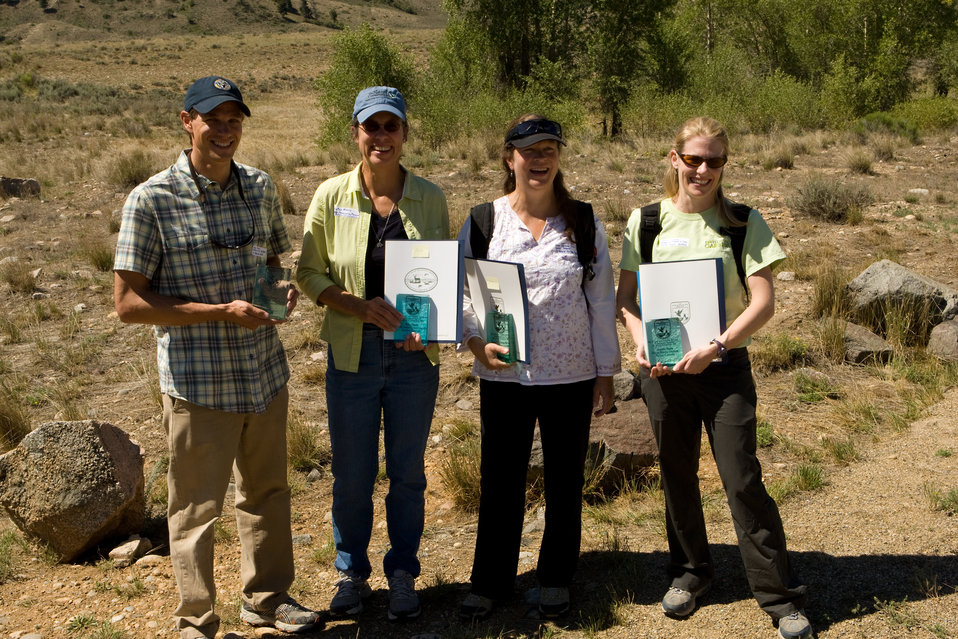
Colorado Rare Plant Conservation Initiative

The Colorado Rare Plant Conservation Initiative (RPCI) is a partnership of 23 statewide and regional agencies, private organizations, and academic institutions working to conserve 121 rare plants in Colorado. As part of these efforts the group developed the Colorado Rare Plant Conservation Strategy, developed Best Management Practices to reduce energy development impacts, addressed climate change, and developed focused strategies for the conservation of individual species at eight priority landscapes. The group has also worked to coordinate volunteer efforts for plant conservation across the state.